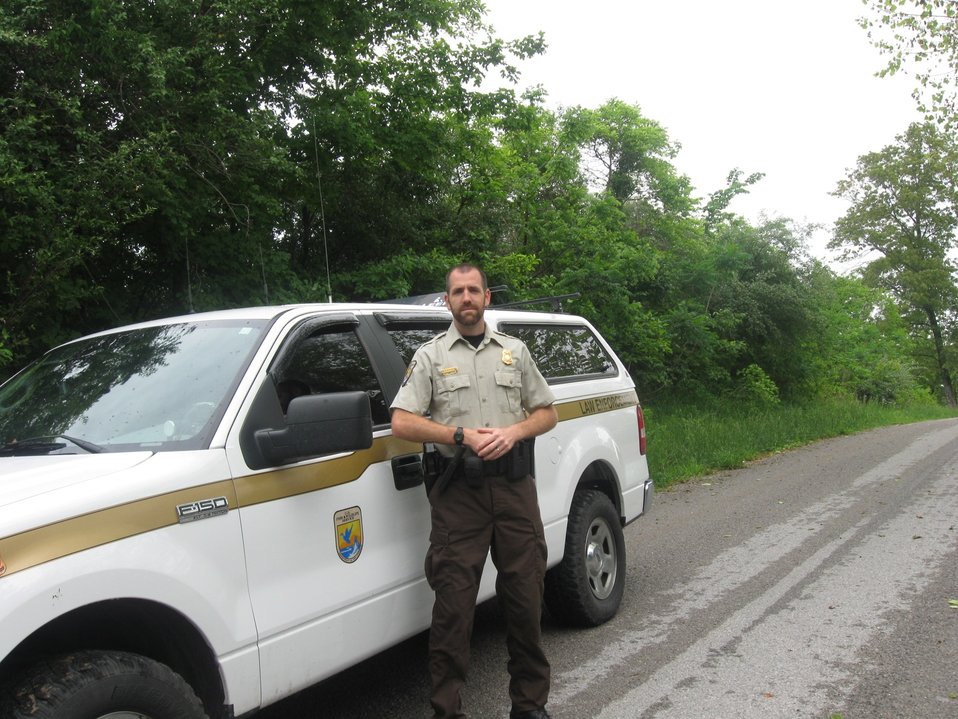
Officer Carl Lantz in field

National Wildlife Refuge System Law Enforcement Officer Carl Lantz helps enforce hunting laws at several refuges in Indiana and Illinois. Lantz, based at Crab Orchard National Wildlife Refuge in Illinois, was named 2011 Officer of the Year for the U.S. Fish and Wildlife Service’s Midwest Region. (USFWS)